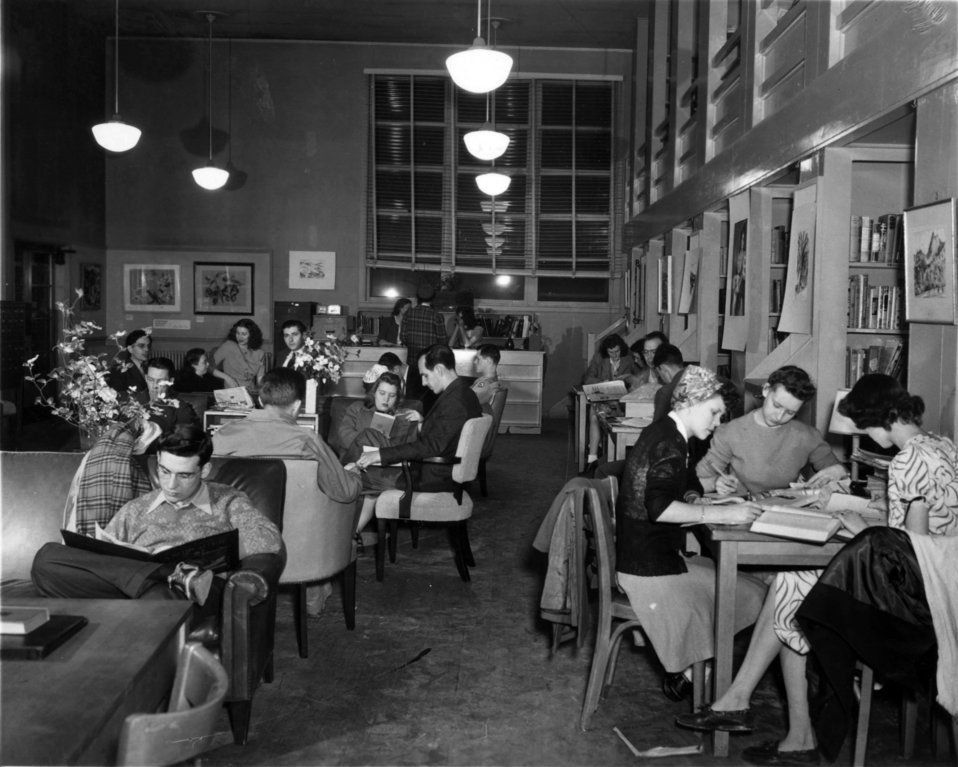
Public Library Oak Ridge

PRO 428 DOE photo Ed Westcott 4-5-1945 Oak Ridge Tennessee